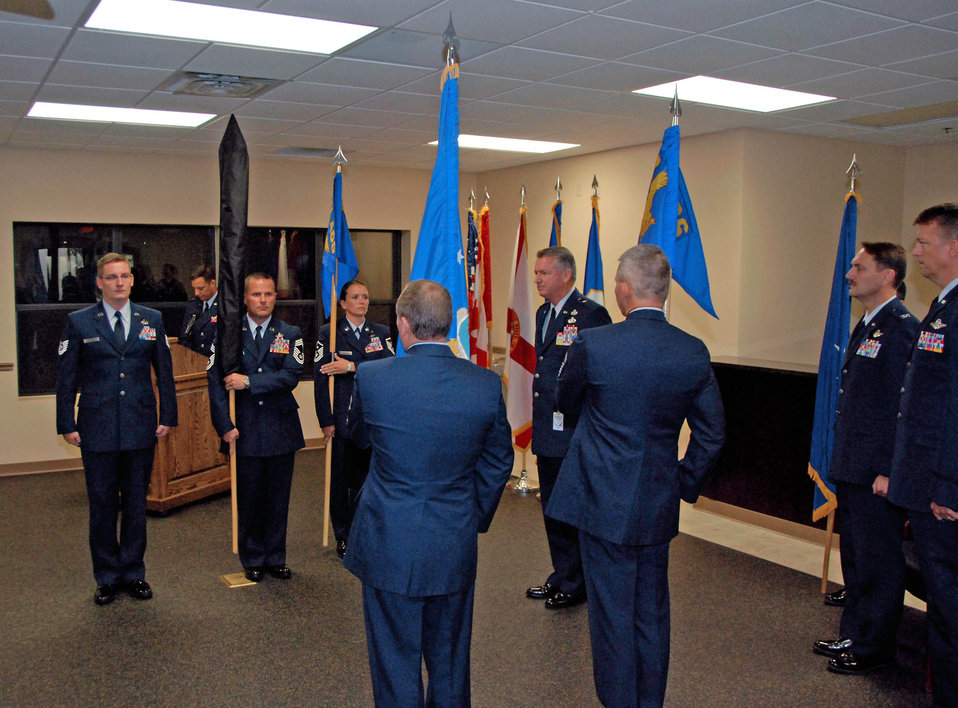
101st Air and Space Operations Group activation

Officials with the 601st Air and Space Operations Center at Tyndall Air Force Base, Fla., participate in a ceremony Aug. 21, 2010, to present the guidon of the newly formed 101st Air and Space Operations Group, formerly known as Southeast Air Defense Sector.